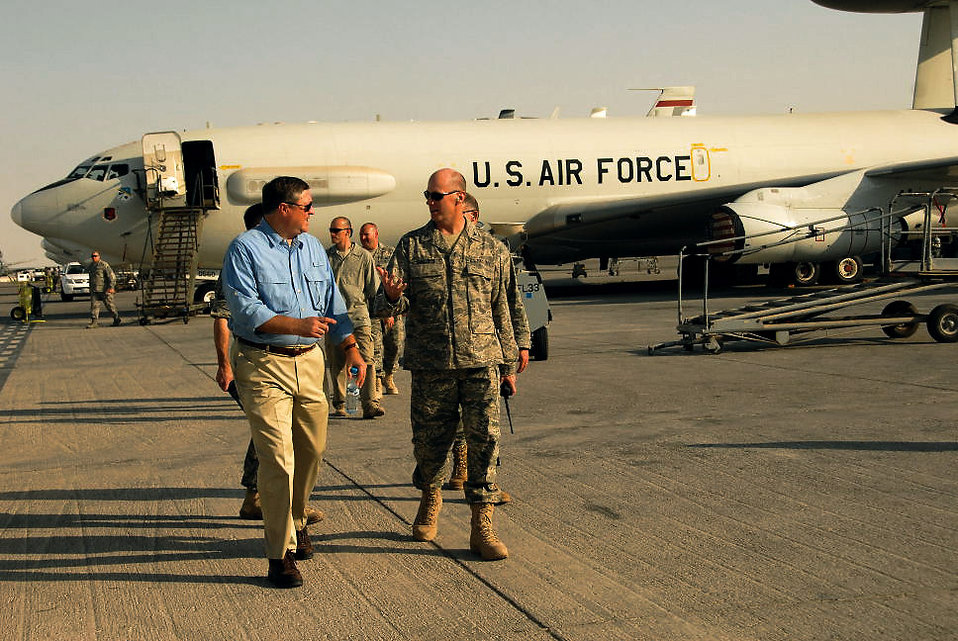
SECAF gains insight into diverse missions at deployed wing

Secretary of the Air Force Michael B. Donley speaks to the 380th Expeditionary Group Commander Col. Raymond Corcoran at an air base in Southwest Asia Oct. 12. The secretary visited the 380th Air Expeditionary Wing to gain a better understanding of the infrastructure and capabilities of one the smallest but most diverse bases in the Air Forces Central area of responsibility.